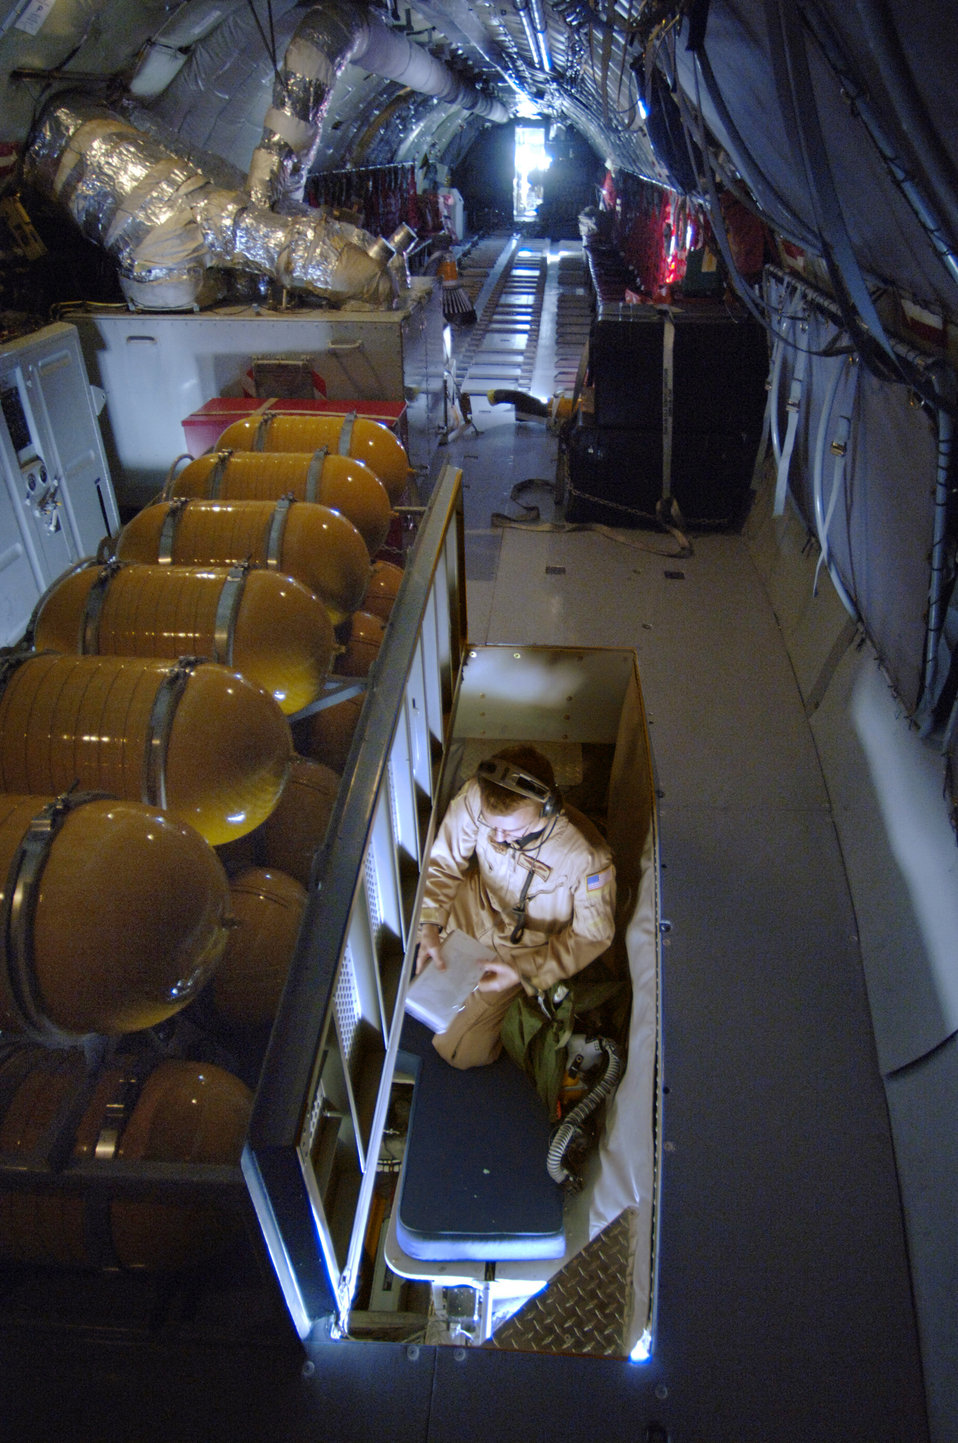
Boom uses steady hand to keep aircraft fighting

Senior Airman Jered Danielson pauses to review a checklist before crawling into the boom pod of the KC-135R Stratotanker. As a boom operator, he helps extend the capability and range of all the aircraft he refuels. Airman Danielson is an in-flight refueling journeyman assigned to the 340th Expeditionary Air Refueling Squadron. He is deployed to Southwest Asia from the 911th Air Refueling Squadron at Grand Forks Air Force Base, N.D.